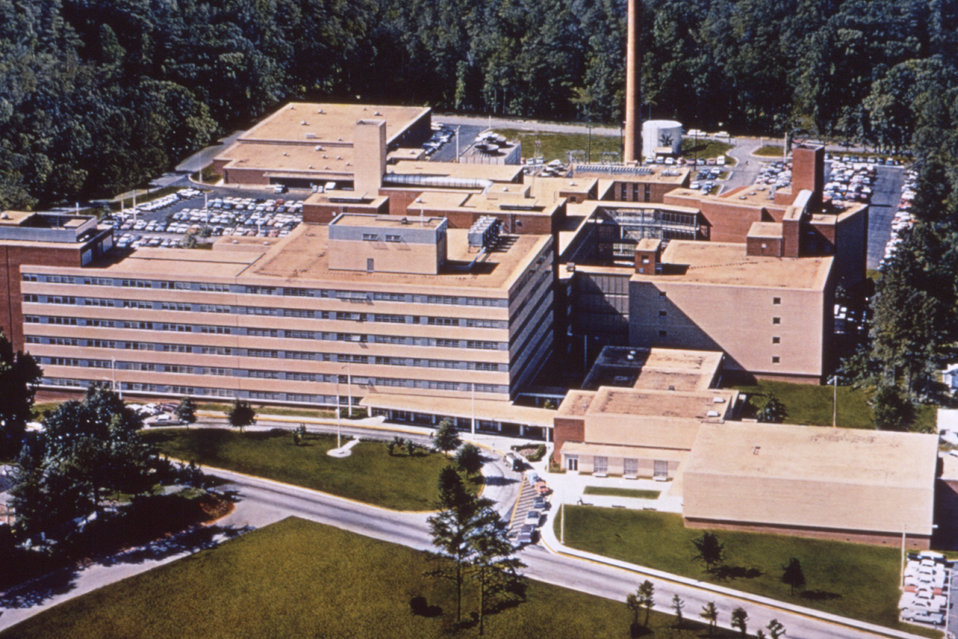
This is a historic aerial photograph showing the CDC headquarters on Clifton Road in Atlanta, GA, during the mid 1970's.